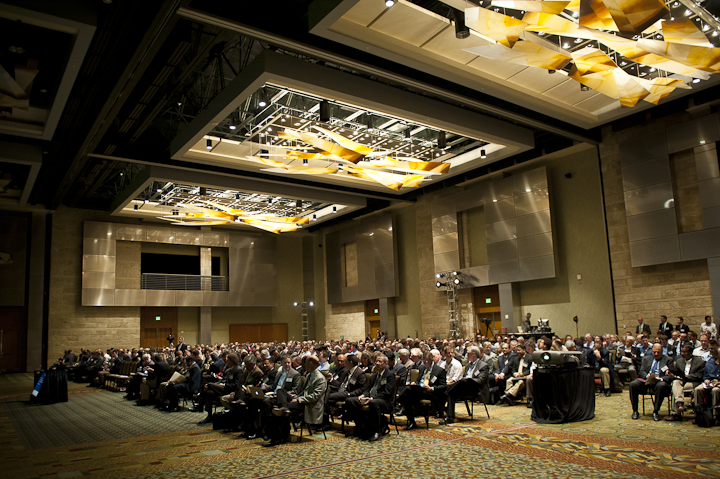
120613 SunShot

Participants gather for the plenary session at the SunShot Grand Challenge Summit and Technology Forum in Denver, Colorado.